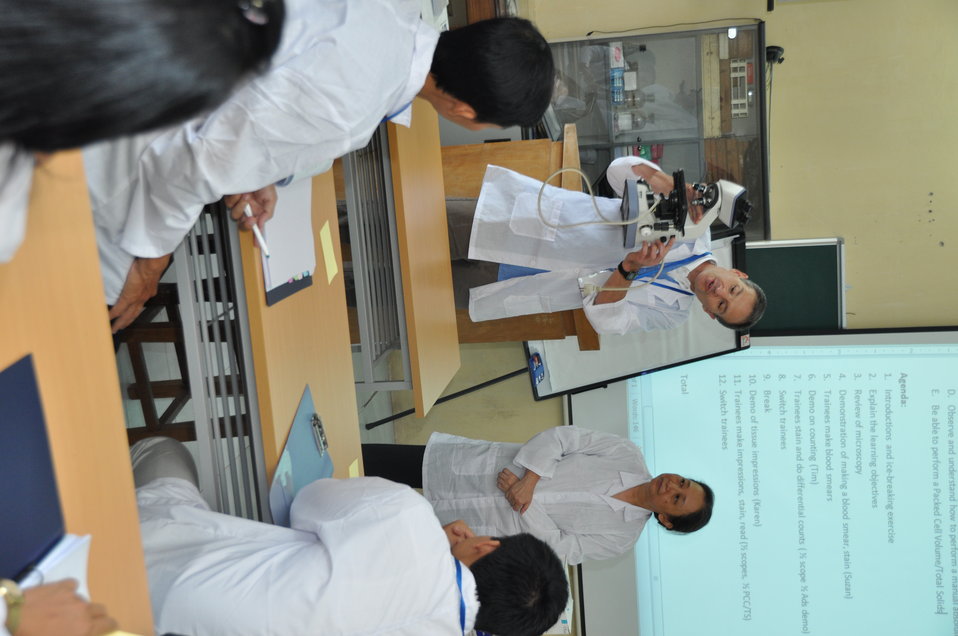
USAID EPT Smithsonian Pathology Training to Detect Emerging Infectious Diseases Wildlife and Other Animals in Vietnam Workshop